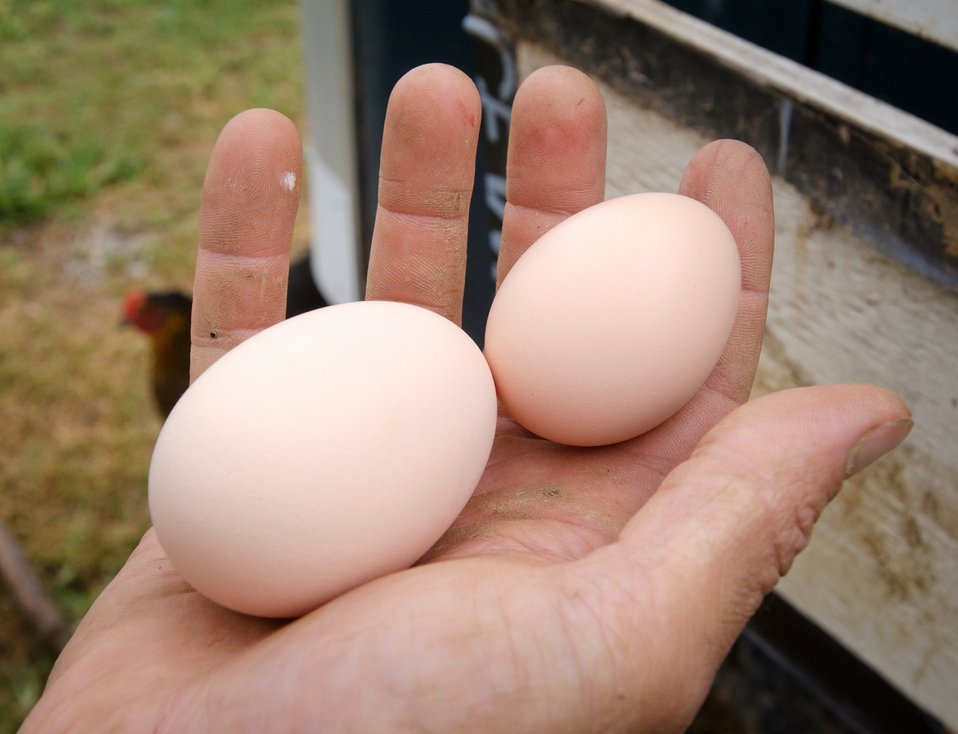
Farm assistant George Kloph shows an large organic egg, right, and a large double yoke egg, left, that he discovered during his checks on the health and safety of laying hens at Nick’s Organic Farm, in Adamstown, MD, on Friday, July 12, 2013. Mr. Kloph said, that younger chickens sometimes lay double yoke eggs and as they get older, the size becomes more consistant. Discarded horse trailers have been repurposed as coops with nests on the side that allow for easy egg harvesting. The farm, owned by Nick Maravell, produces Black Angus beef, chicken, turkey, eggs, hay, soybeans, corn, alfalfa, orchard grass, rye; and other crops. The cattle are100% grass-fed receiving certified organic pasture, certified organic hay (in winter), water and mineral salts mixed with sea kelp. The cattle are not fed hormones, antibiotics or animal products. Poultry feed from grain is ground from organic grain. The poultry also graze on organic pastures. The farm has conducted on-farm research with federal, state and non-profit agencies to refine organic practices. An organization such as the U.S. Department of Agriculture (USDA) Agricultural Research Service (ARS) center in Beltsville has been able to conduct research to improve organic crops and to breed and manage the cattle so that they have.